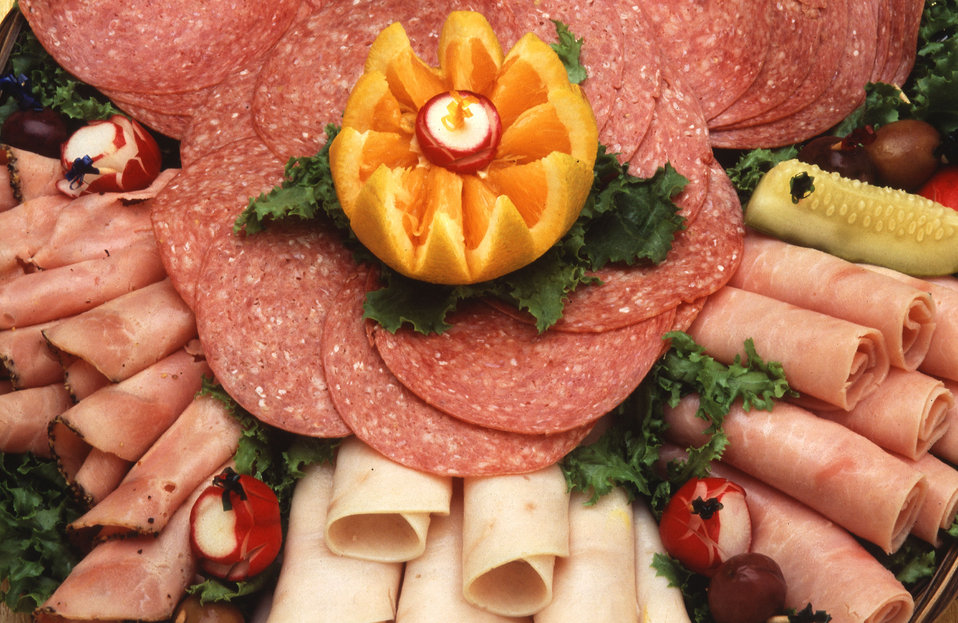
The U.S. Department of Agriculture (USDA) Agricultural Research Service (ARS) has looked at the source of flavor differences in beef, pork, lamb, and veal to find out what happens when it's aged in storage. A USDA ARS scientist changed the way that fermented meats like pepperoni and Genoa salami are made. The scientist found that a bacterial starter stimulates faster, more consistent fermentation than traditional methods and guarantees a better product. USDA ARS scientists discovered that just about all processed meats can be made with 20 to 25 percent less salt with no risk of spoilage. Proper refrigeration, it turns out, is more important than salt level in retarding the growth of microorganisms that cause spoilage.